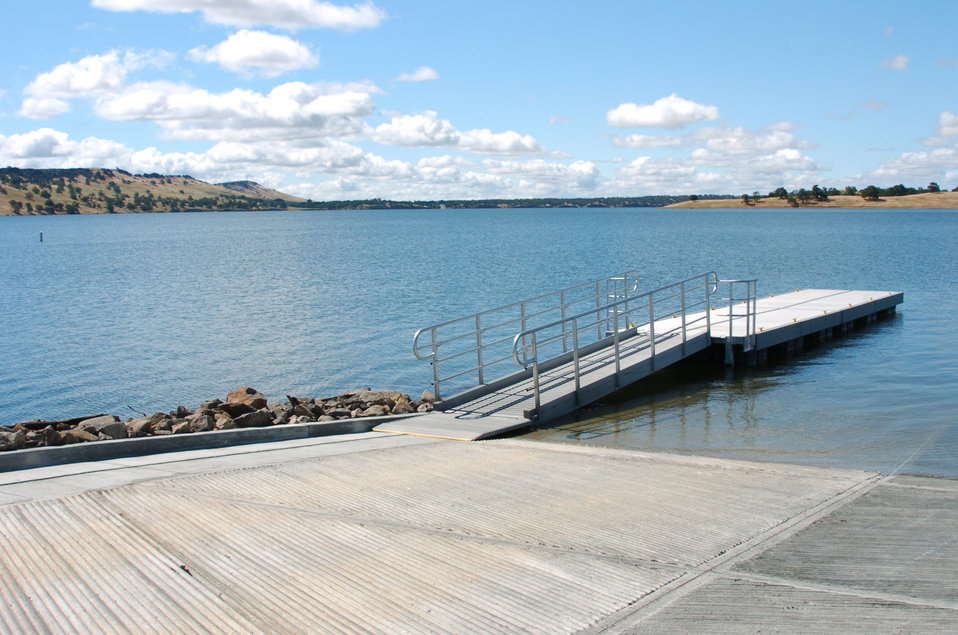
New boat ramp opens at Black Butte Lake

A new boat ramp at Black Butte Lake, Calif., awaits summer visitors May 18, 2011. The ramp was expanded in a project funded by a grant from the California Department of Boating and Waterways.